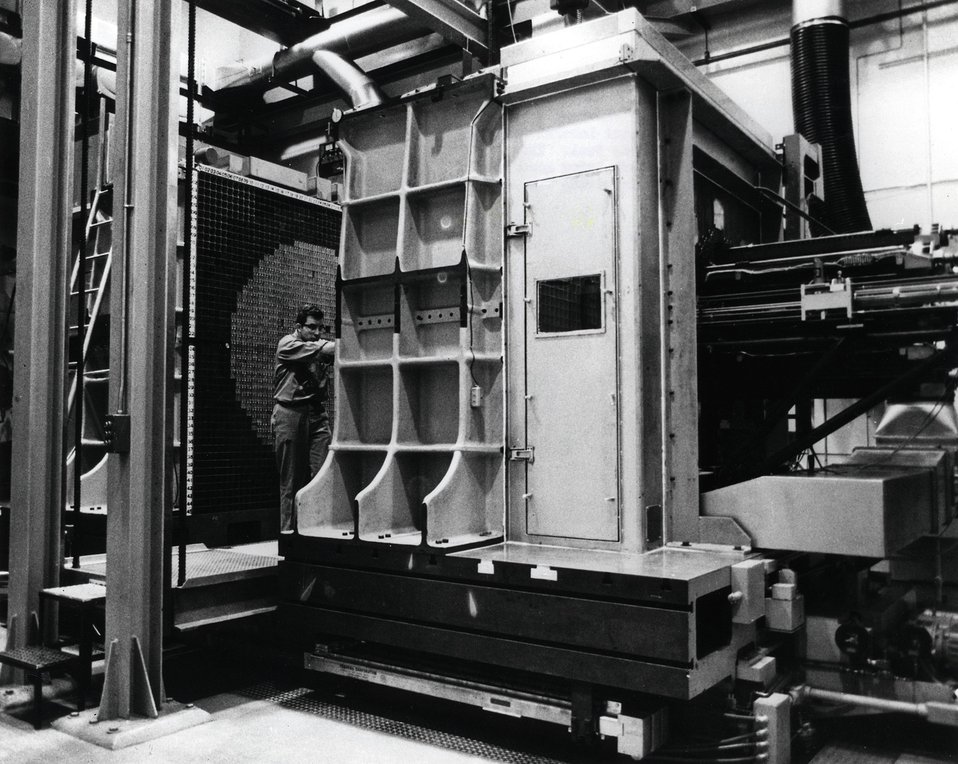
ZPR IX one of the fast critical assemblies at Argonne. c.1970